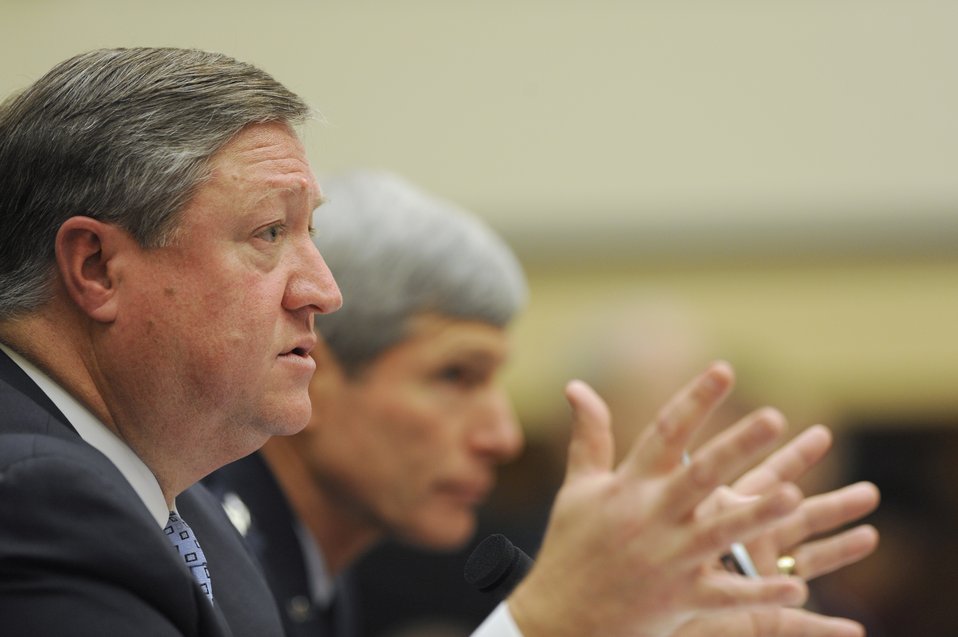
Chief of staff's testimony addresses 'Don't Ask, Don't Tell' repeal initiative

Secretary of the Air Force Michael Donley testifies before the House Armed Services Committee Feb. 23, 2010, in the Rayburn House Office Building on Capitol Hill, along with Air Force Chief of Staff Gen. Norton Schwartz. The committee met to receive testimony on the fiscal 2011 Air Force budget request.